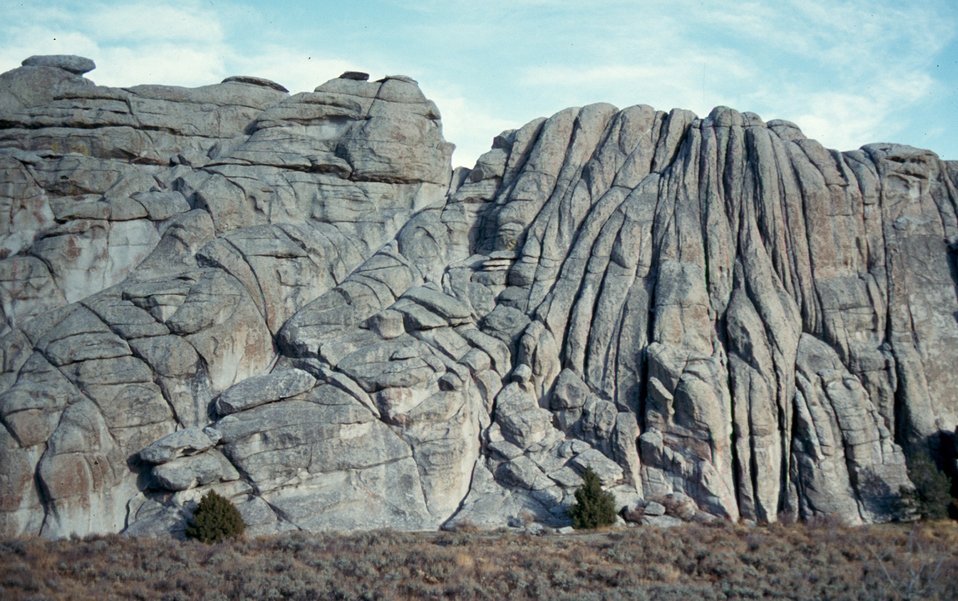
Silent City fractions in Granite Burley Field Office USRD Upper Snake River District